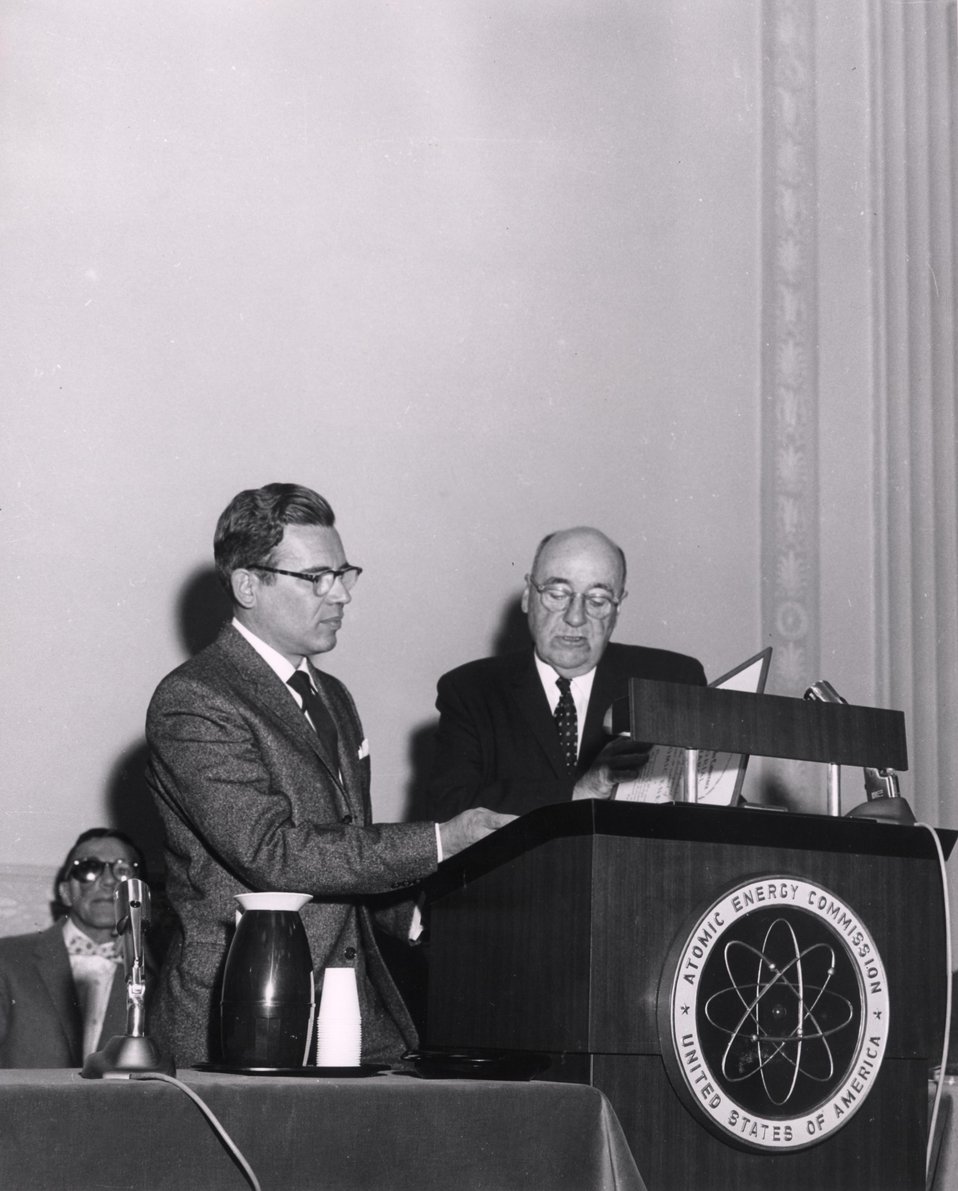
Lawrence Award Ceremony, 1961.